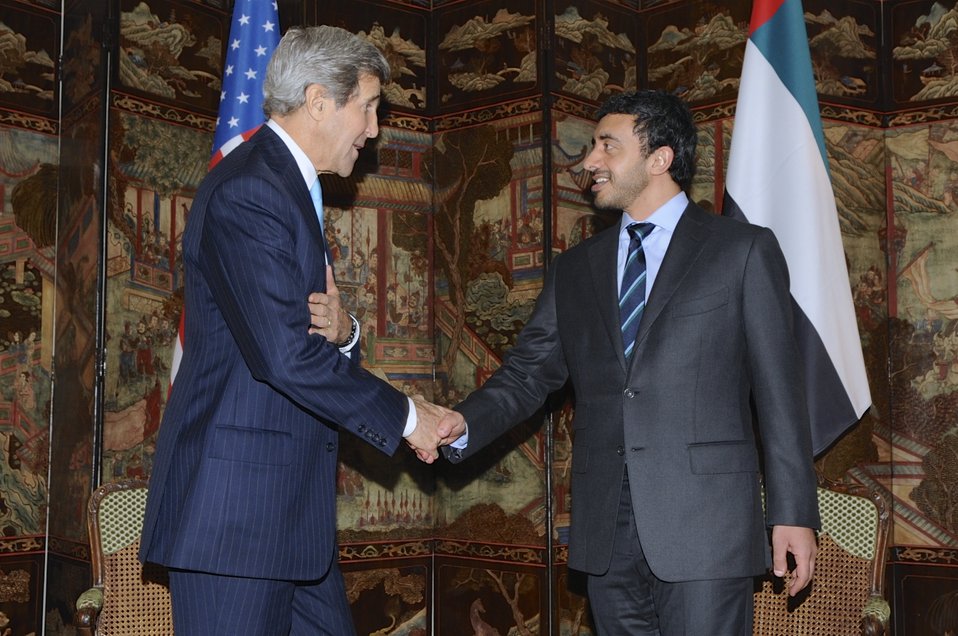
Secretary Kerry Meets With United Arab Emirates Foreign Minister bin Zayad al Nayan

U.S. Secretary of State John Kerry shakes hands with United Arab Emirates Foreign Minister Abdullah bin Zayed al Nayan before a bilateral discussion that followed a meeting of the London 11 group in Paris, France, on January 12, 2014.